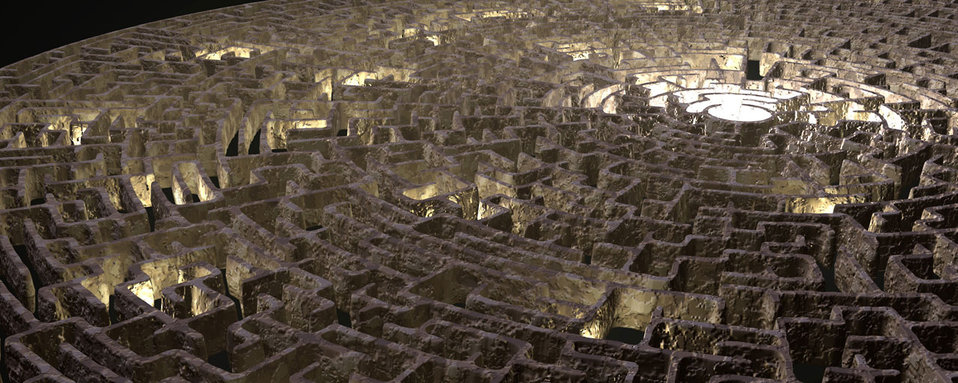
Circle maze

Rendered image of a circular maze with lights..